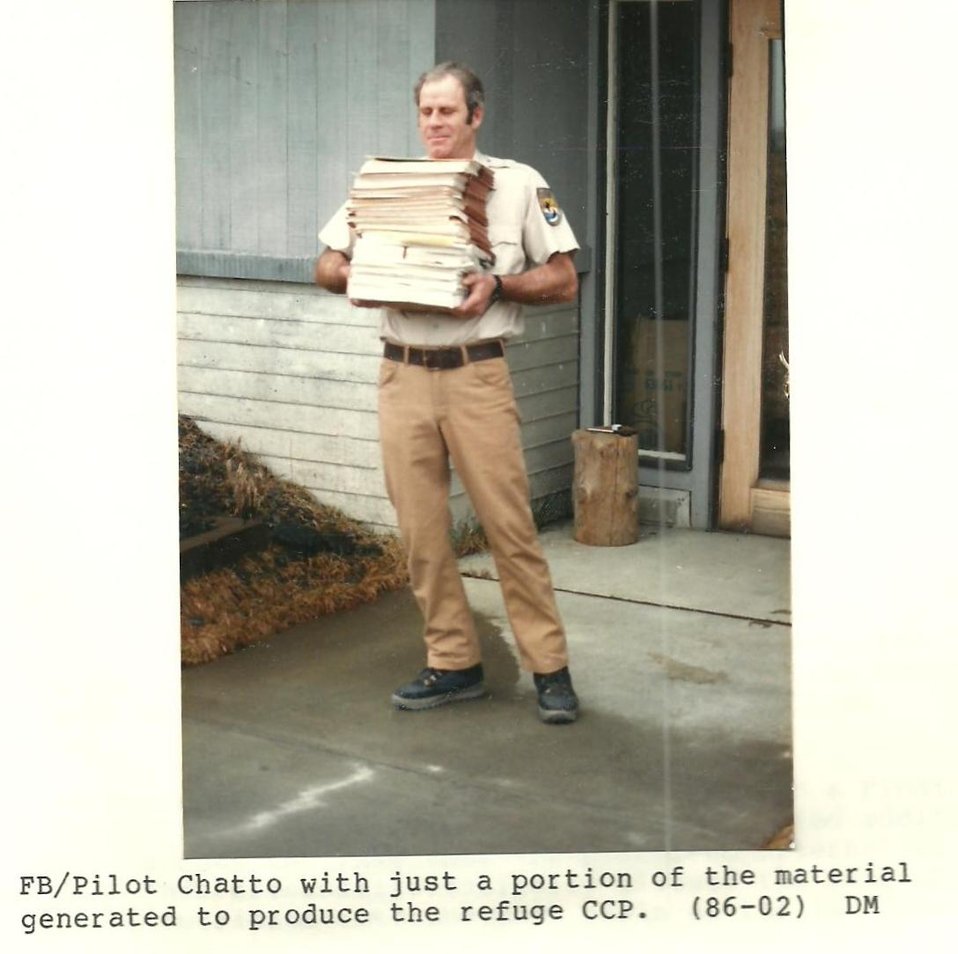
(1986) Reports Headaches

Credit: USFWS

Source and Contact: Kodiak National Wildlife Refuge